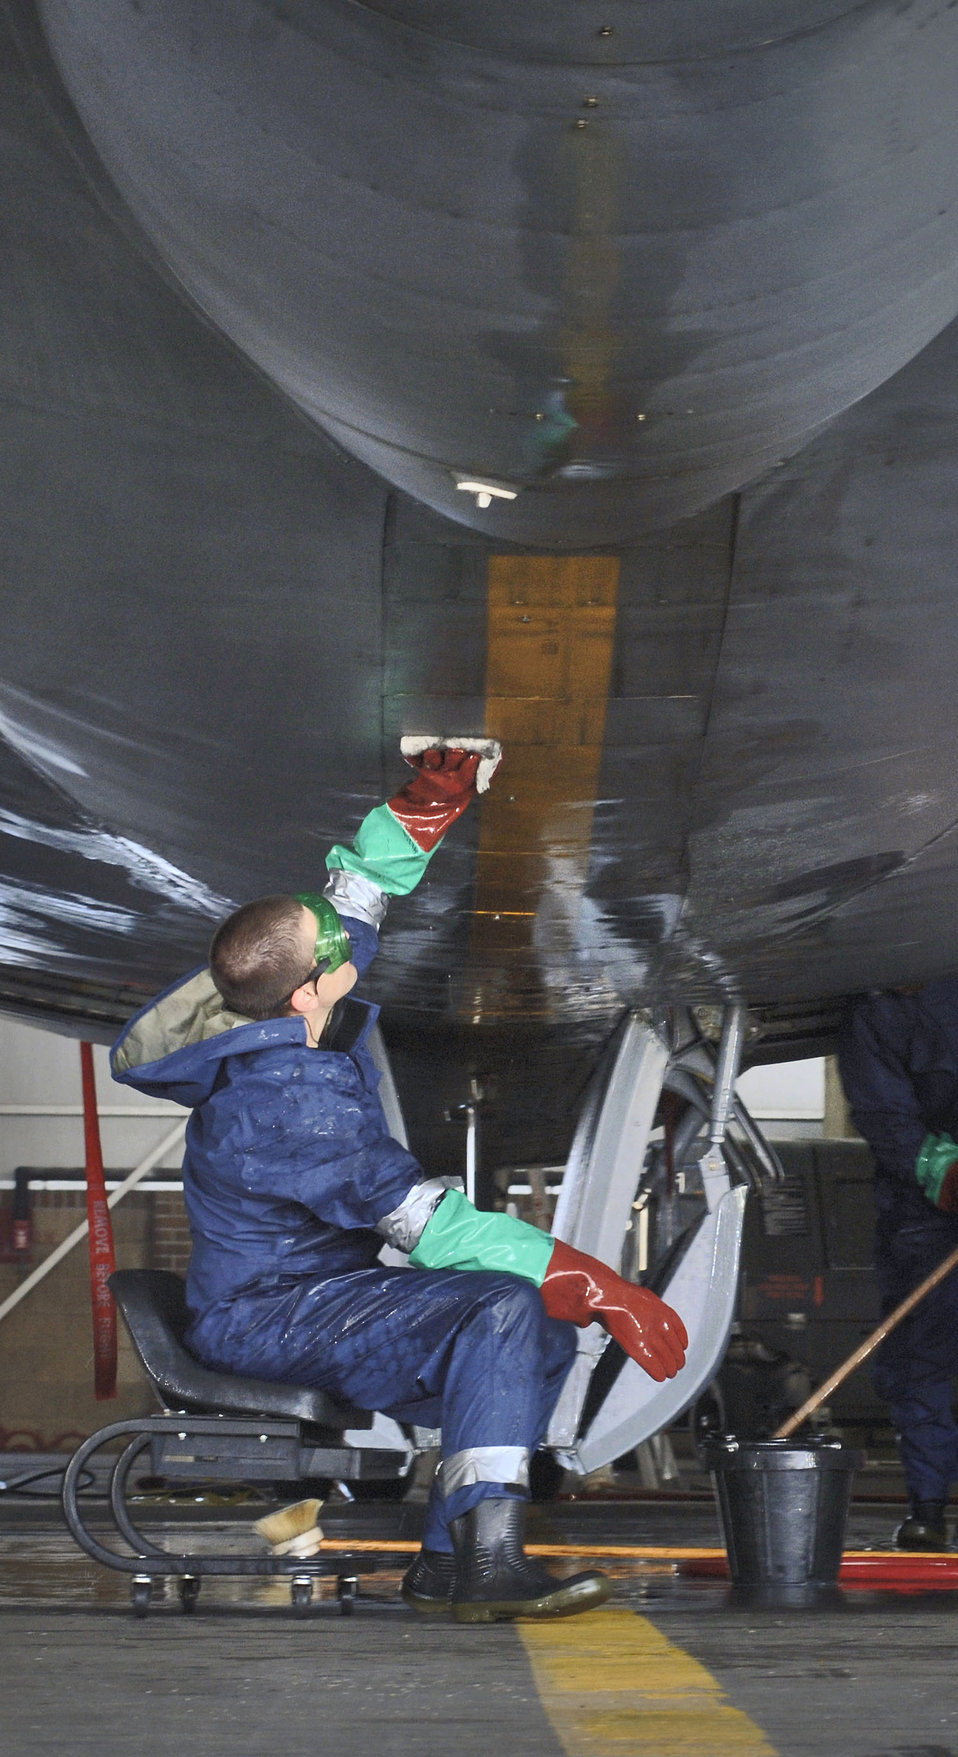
Mildenhall's tanker services in high demand

Senior Airman Jeremy Lueth hand-washes the centerline on the underbelly of a KC-135 Stratotanker at Royal Air Force Mildenhall, England, on July 24. The Airman is with the 100th Aircraft Maintenance Squadron. He spends 12 hours a day with a cleaning team that keeps the nearly 50-year-old aircraft corrosion free and looking its best.